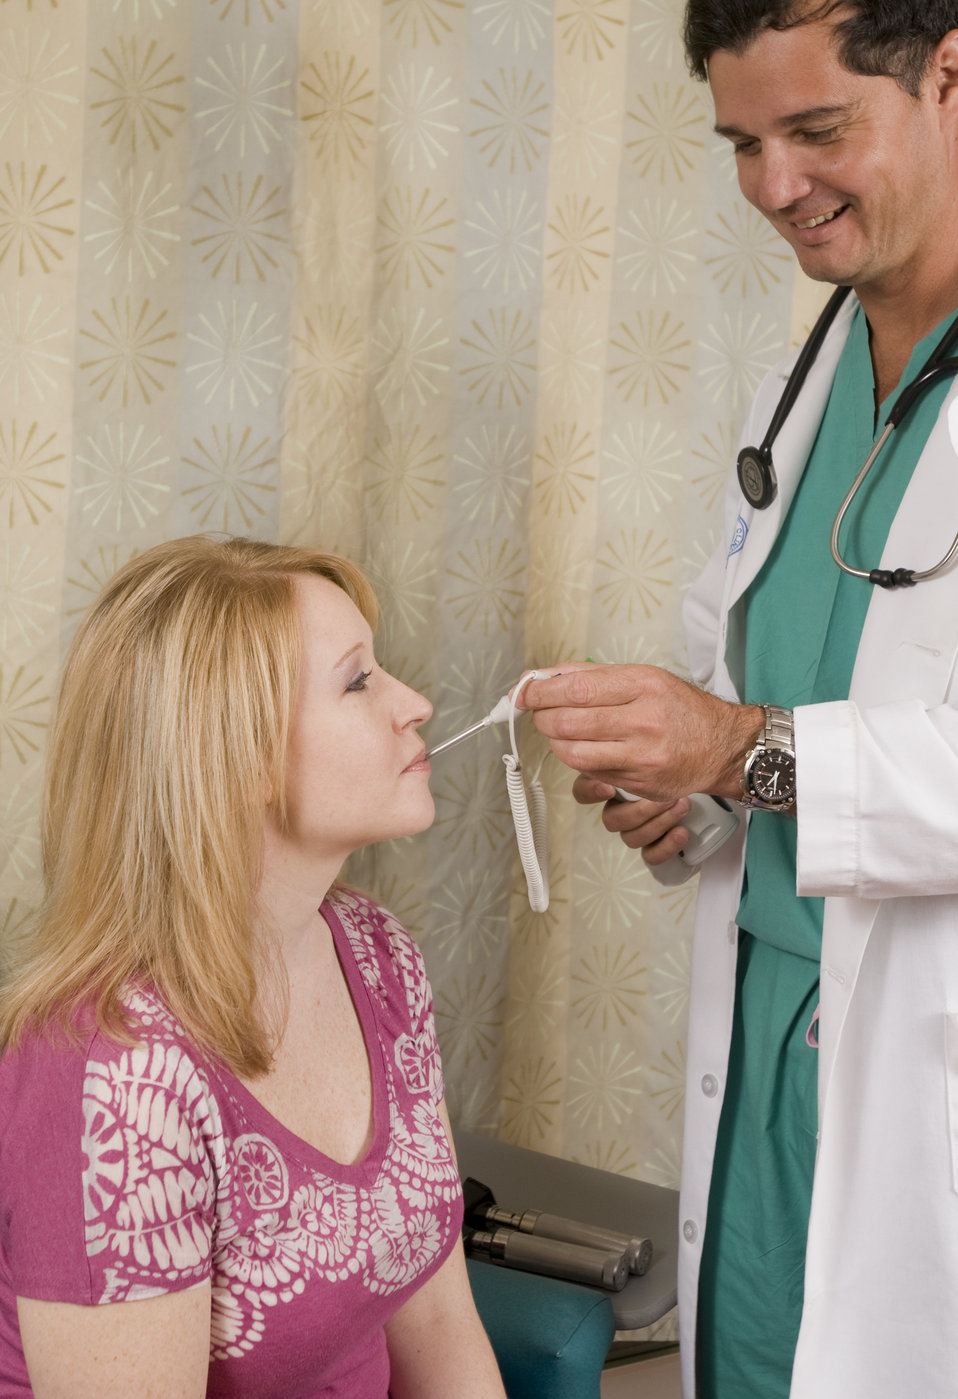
A doctor and a female patient

Seated in a clinical setting during her physical examination, this image depicts a seated female patient who was in the process of having her body temperature analyzed by a physician using an orally-administered thermometer.